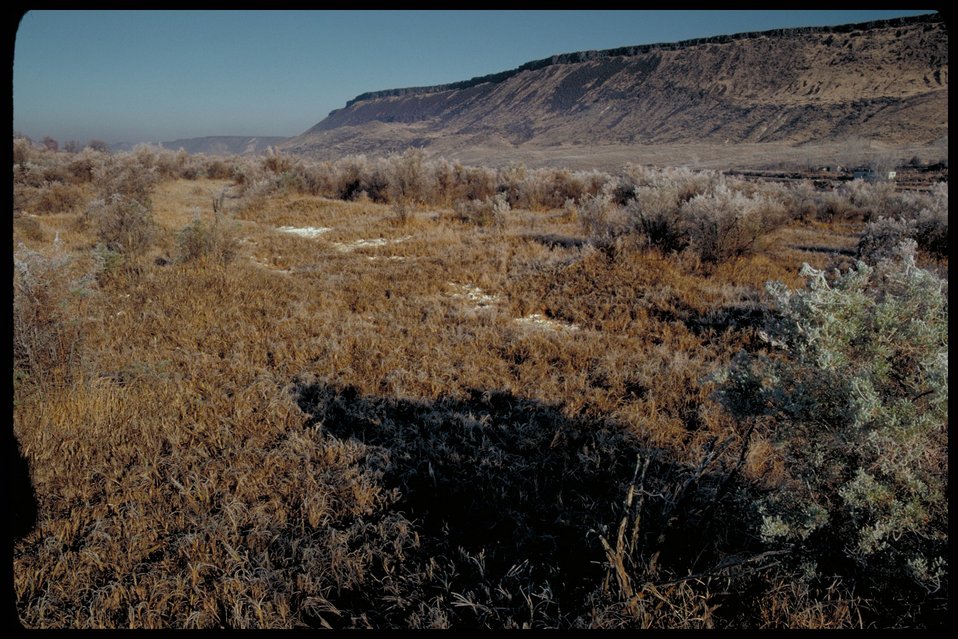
Oregon Trail near Givens Hot Springs Lower Snake River District